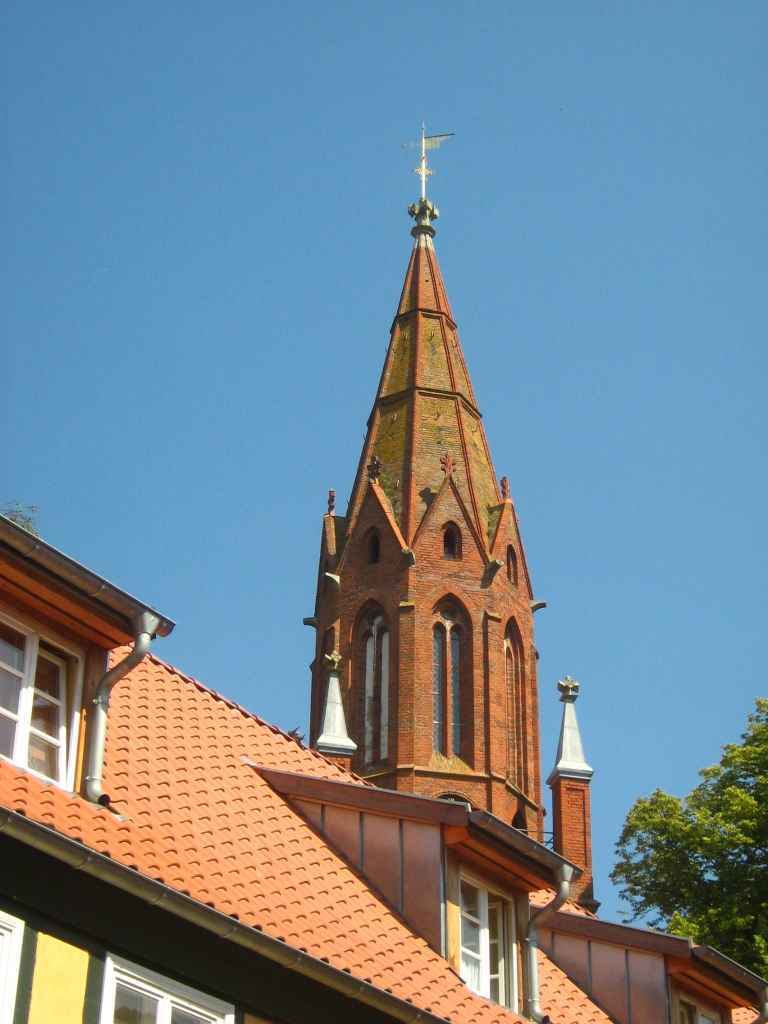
Deutsch: Ueckermünde, Kirchenturm